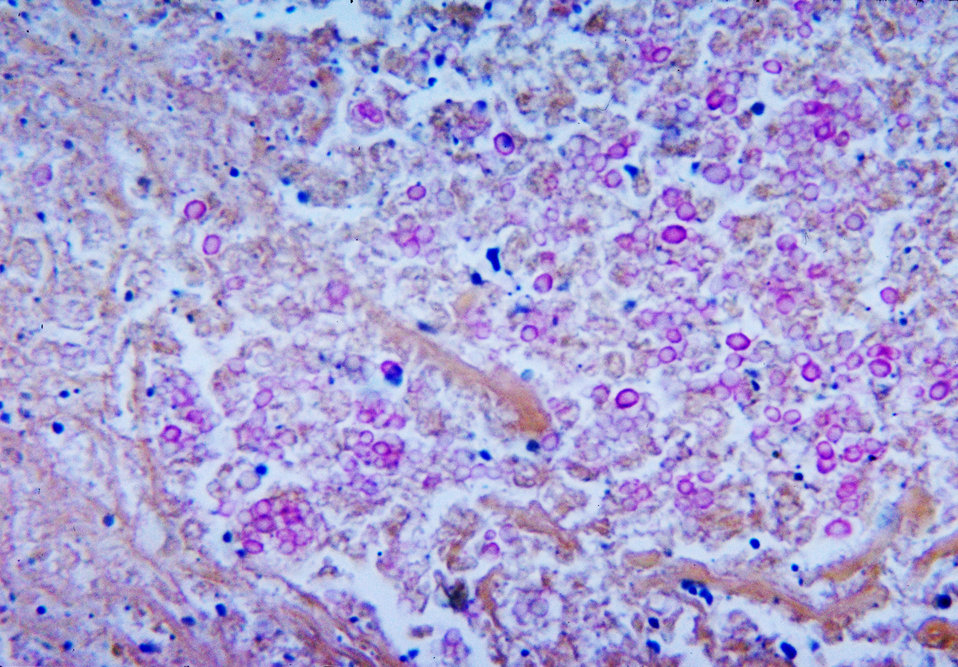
This micrograph depicts the histopathologic changes associated with cryptococcosis of the lung using Mucicarmine stain.